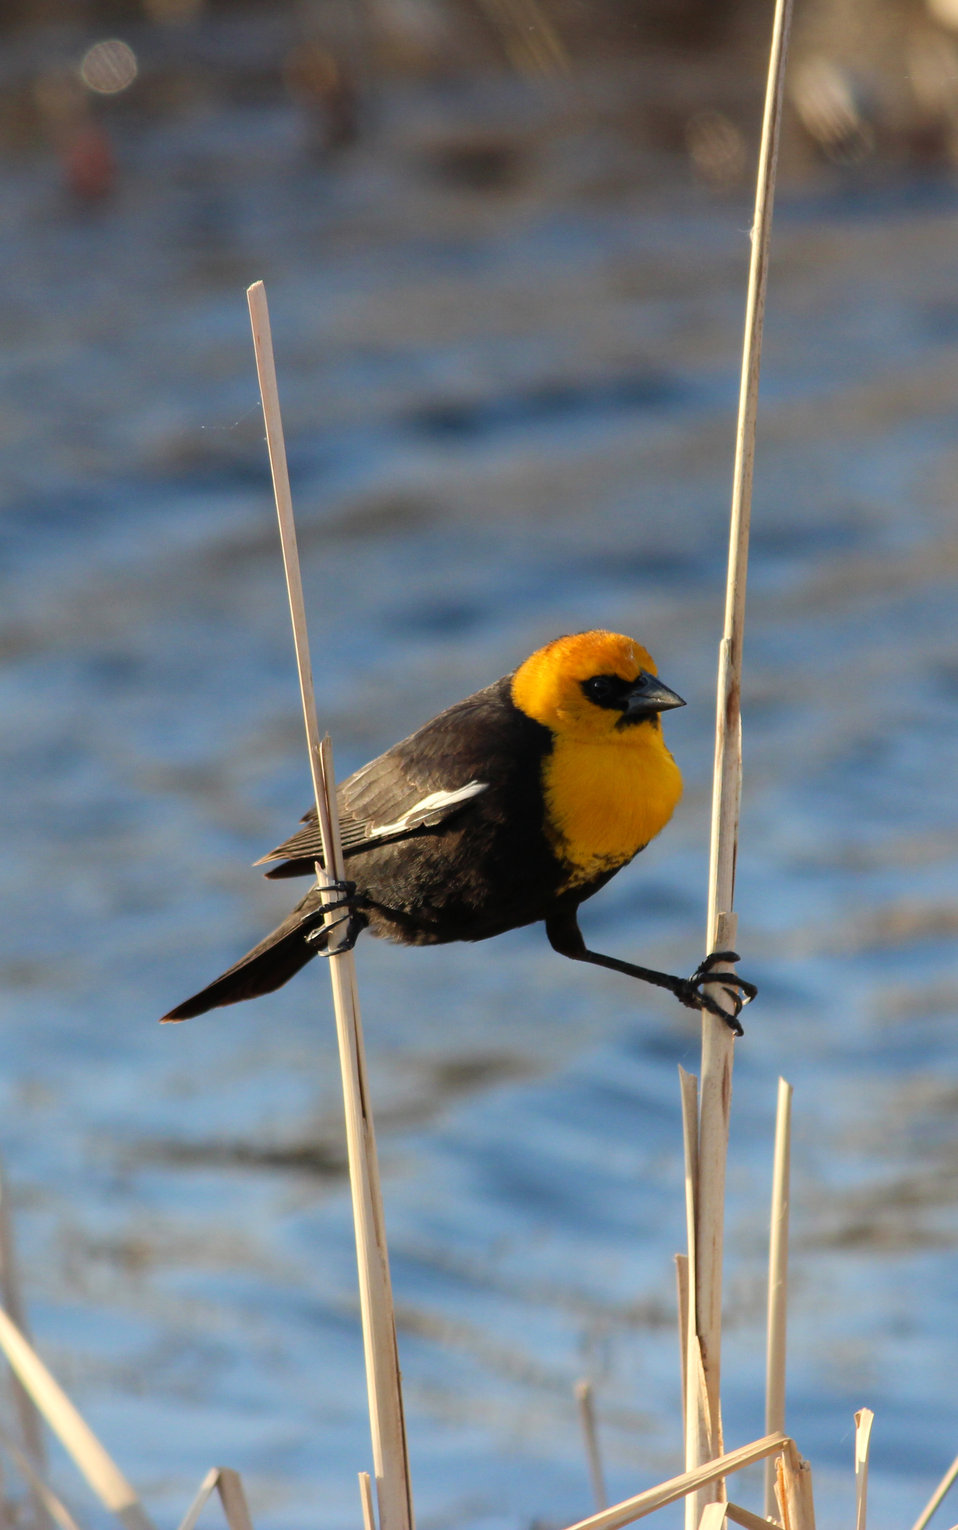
The Splits!

This yellow-headed blackbird is perched rather awkwardly between two cattail stems. The female of this species is not nearly as brightly colored. She will weave a nest into the cattails, reeds, or rushes over standing water and will lay 2-5 eggs.